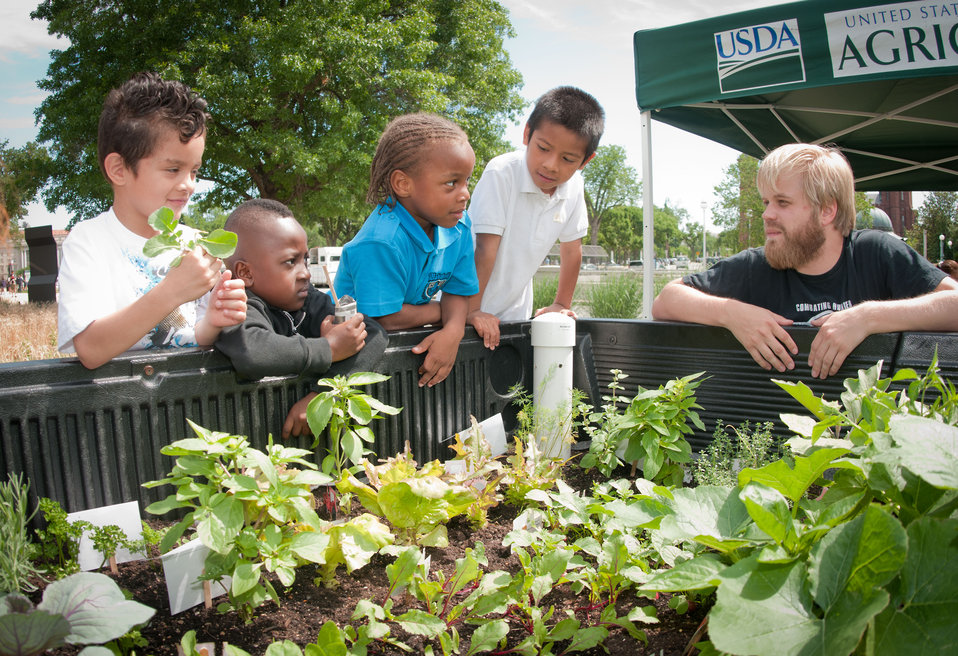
Stephen (black t-shirt) and students from Powell Elementary School in Washington, DC, hunt for herbs on a nearby table, during the USDA Farmers Market and the official kick off of the People's Garden Friday activities on Friday, June 3, 2011 in Washington, DC. More than 200 children participated in activities at several learning stations teaching them how to make planter pots out of household trash items; make salsa; experience the taste and smell of herbs; then search for those plants in the bed of Truck Farm, a mobile garden; and have a guided tour of the People’s Garden. For many, it was the first time to eat a pea from a pod, plucked from a vine. The adjacent USDA Farmers Market is located at the corner of 12th Street and Independence Avenue and will be open every Friday from 10:00 a.m. - 2:00 p.m. through November 18th. Special events will be happening every Friday at the market and at the People's Garden all season.